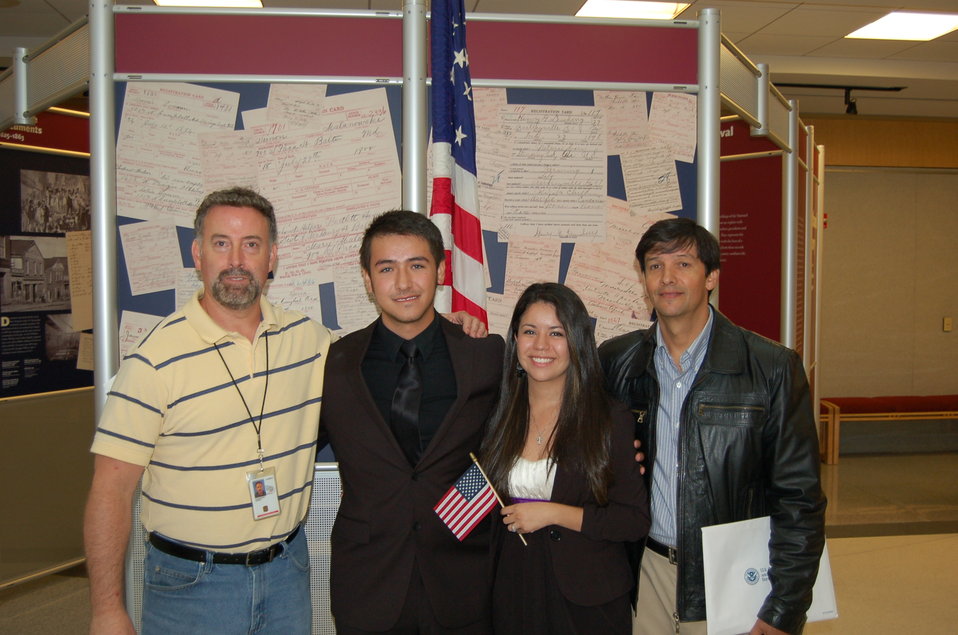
New Citizens